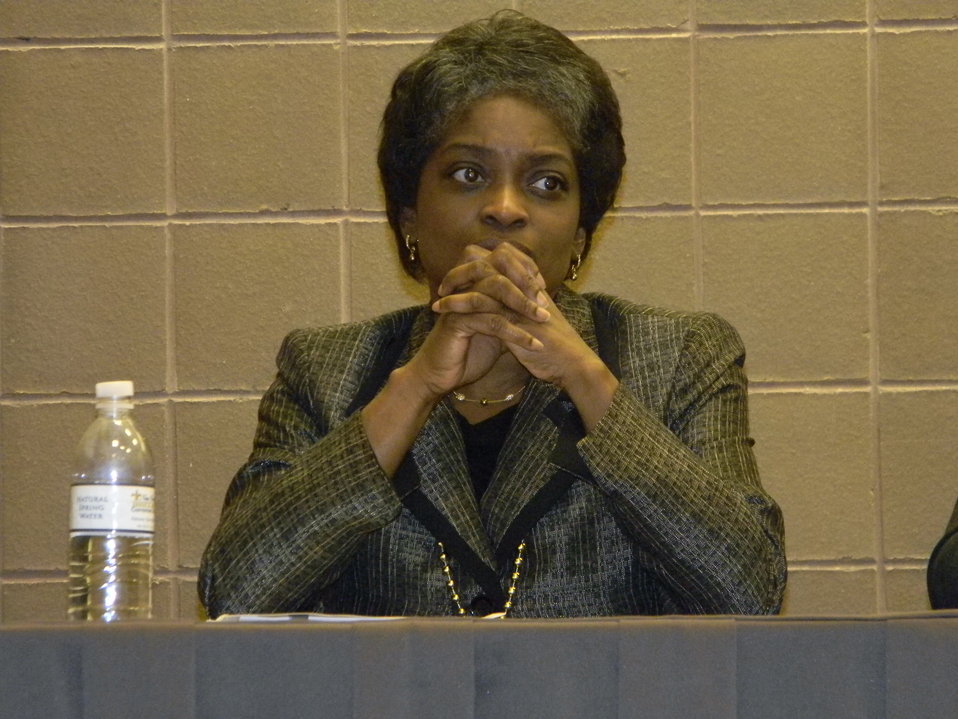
2012 National Urban League Conference

Commissioner Mignon Clyburn, panelist on the the Job Creation and Education: Programmatic Efforts to Increase Broadband Adoption in African American Communities panel.